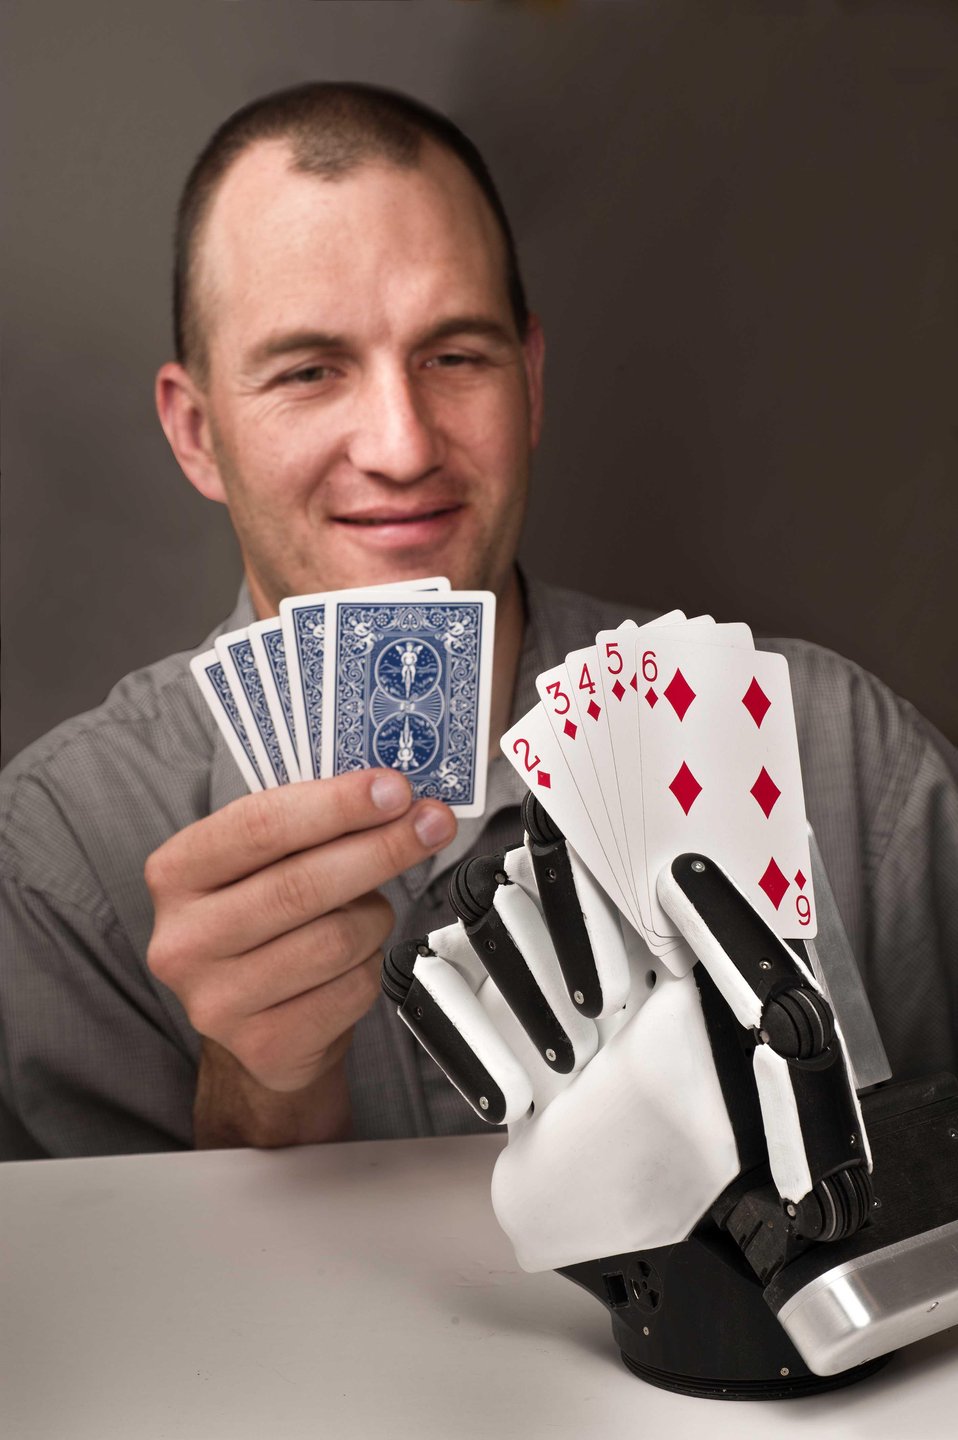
Sandia National Laboratory has developed a cost-effective robotic hand that can be used in disarming Improvised Explosive Devices, or IEDS.

The Sandia Hand addresses challenges that have prevented widespread adoption of other robotics hands including cost, durability dexterity and modularity. The Sandia Hand is funded by the Defense Advanced Research Projects Agency.